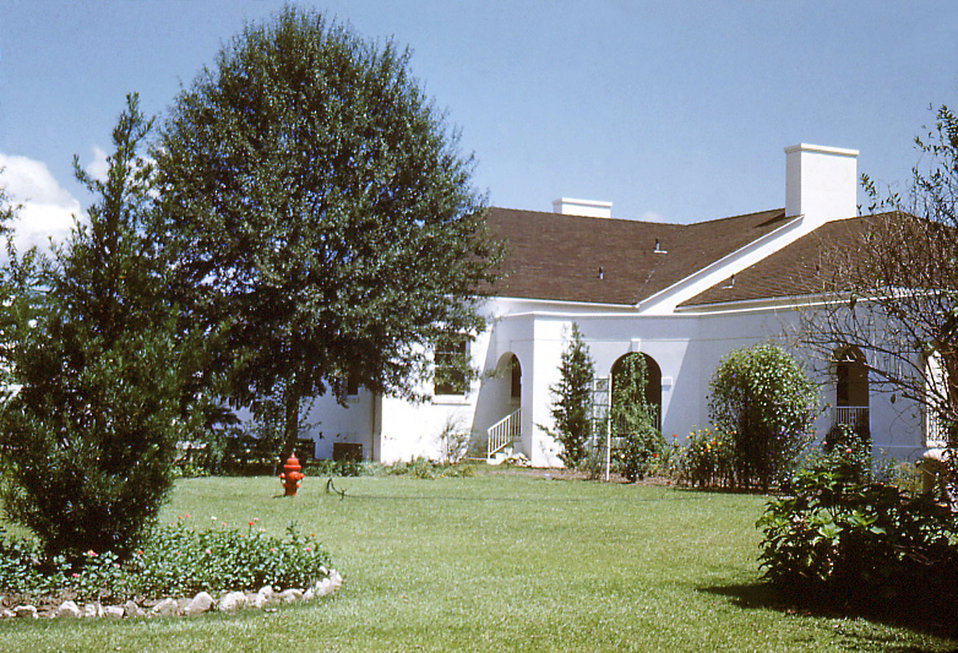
This scene, shot on the grounds of the historic Carville, Louisiana Leprosarium, depicted the picturesque landscape surrounding what was the Protestant Chapel, which had recently been renovated prior to this photograph. There were two chapels on the hospital's premises.The National Hansen's Disease Museum's (NHDM) mission is to collect, preserve and interpret the medical and cultural artifacts of the Carville Historic District. In addition, we want to promote the understanding, identification, and treatment of Hansen's Disease (leprosy). We fulfill this mission by creating and maintaining museum displays, traveling exhibits, publications and a website in order to educate and inform the public on all levels.